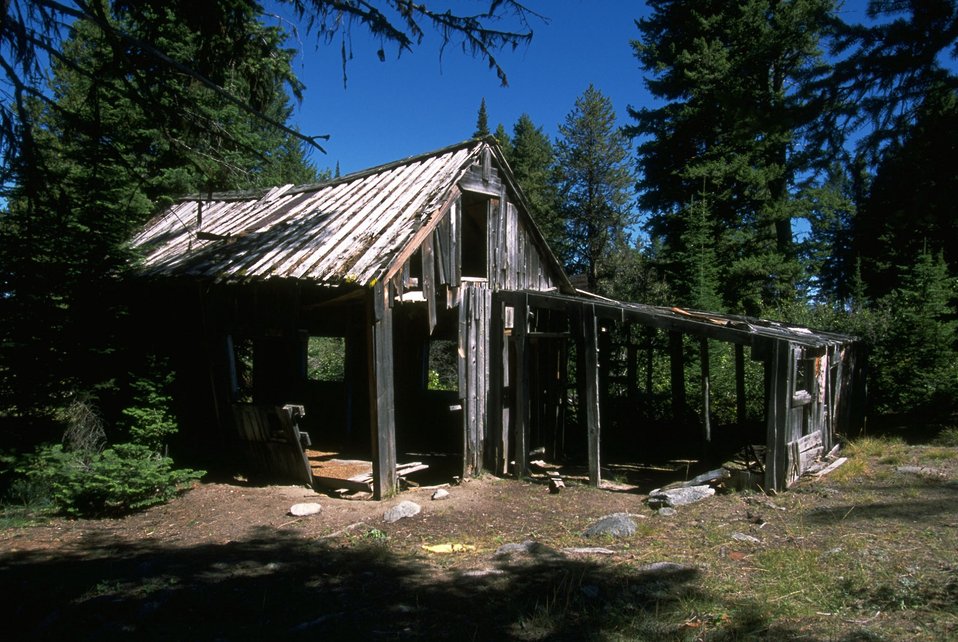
Dilapidated cabing in Coloma Ghost Town